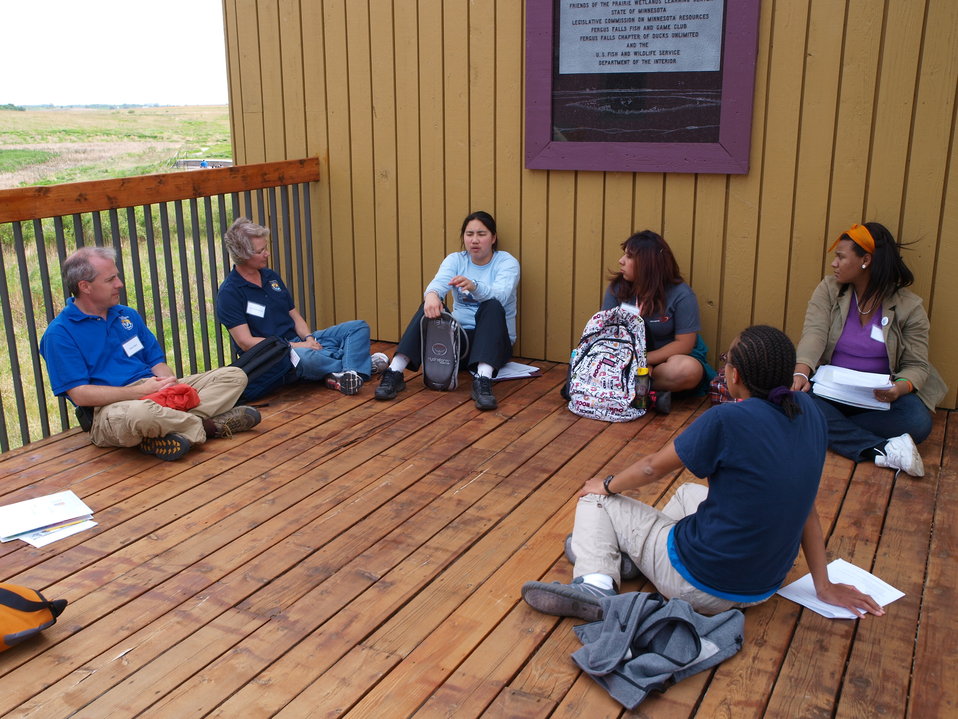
CDIP 2012 Fergus Falls

Tom and Cathy meeting with menthes